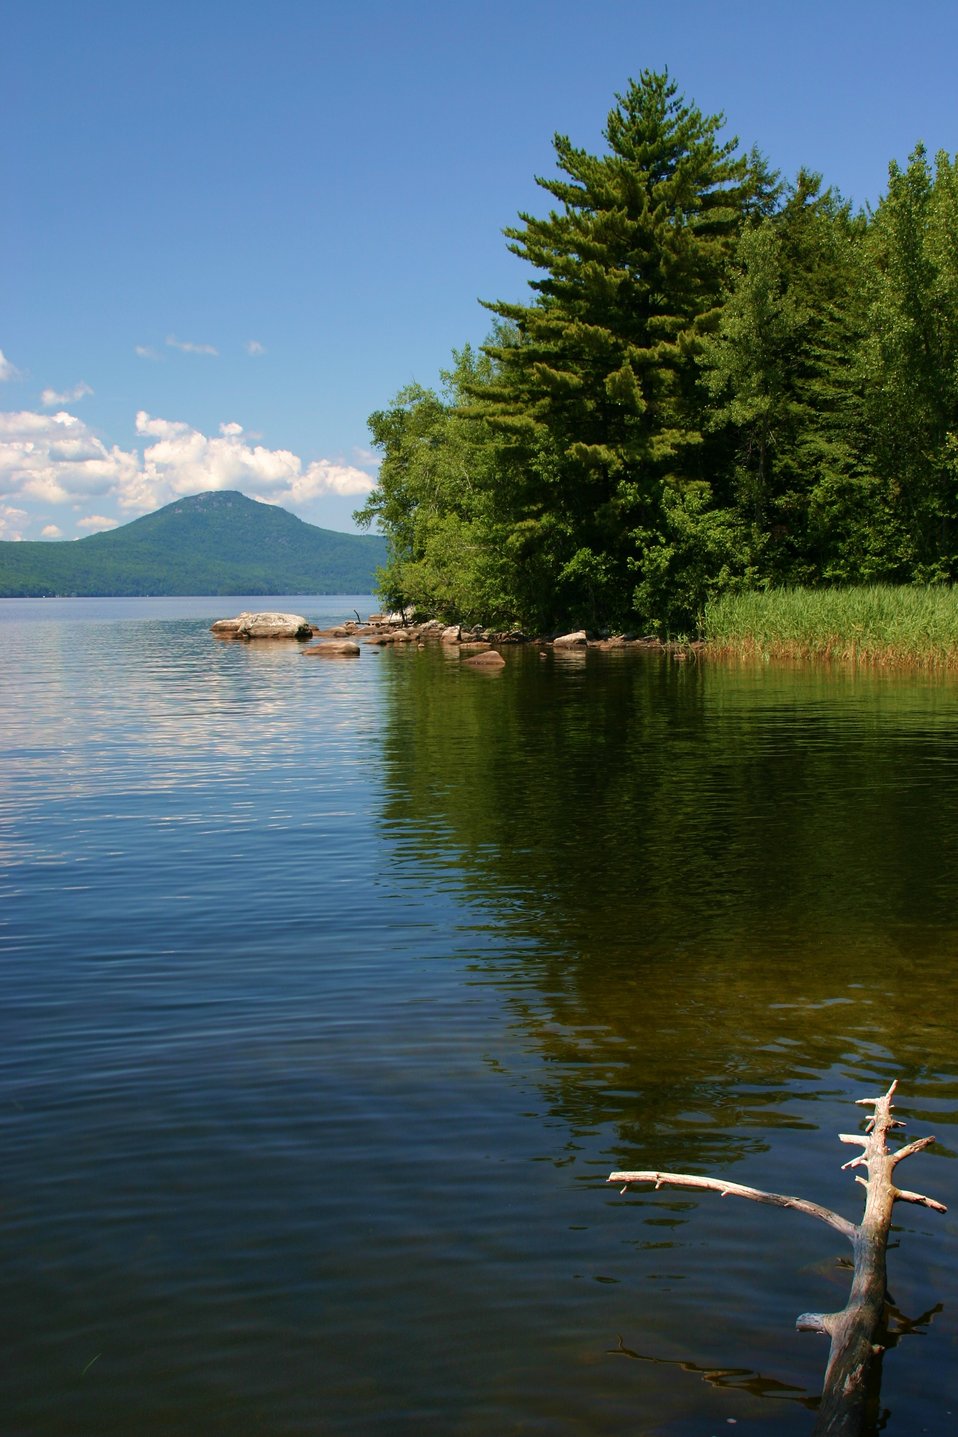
Eagle Point Unit July 28, 2011

Shoreline of the new Eagle Point Unit of Missisquoi NWR. There is about one mile of undeveloped shoreline on Lake Memphremagog in Northern Vermont. This unit is being managed under a cooperative agreement with the Vermont Fish and Wildlife Department.